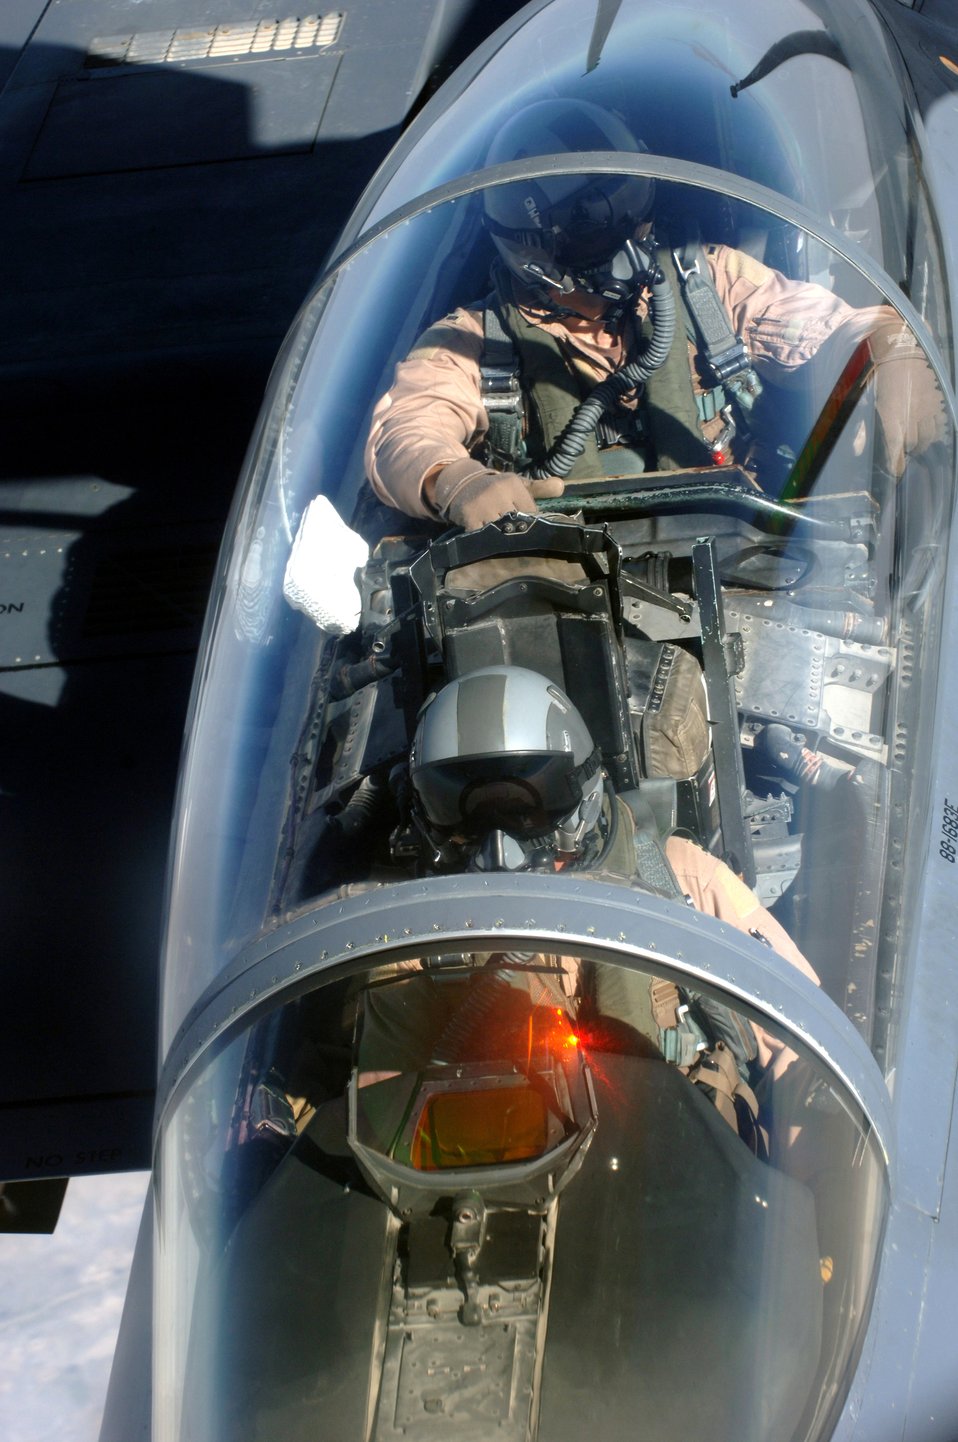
A view to a refuel

An F-15E Strike Eagle from the 336th Expeditionary Fighter Squadron is refueled over Southwest Asia by a KC-135 Stratotanker from the 340th Expeditionary Air Refueling Squadron on Tuesday, April 11, 2006. The F-15E is deployed from Seymour Johnson Air Force Base, N.C., and the KC-135 is from Fairchild AFB, Wash.